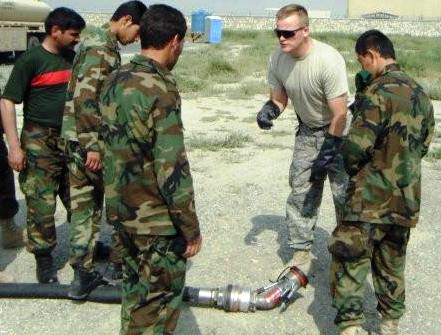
Airman instructs Kabul's first POL course

Master Sgt. Tracy Wolfe teaches his students about the single point nozzle Aug. 6 in Kabul, Afghanistan. He taught subjects including information safety, vehicle inspection, facility inspection, forms and fueling operations through two blocks of instruction over a 33-day period. Sergeant Wolfe instructed Kabul's first Petroleum, Oils and Lubricants course. Sergeant Wolfe is a fuels complex instructor assigned to the 364th Training Squadron fuels complex instructor.